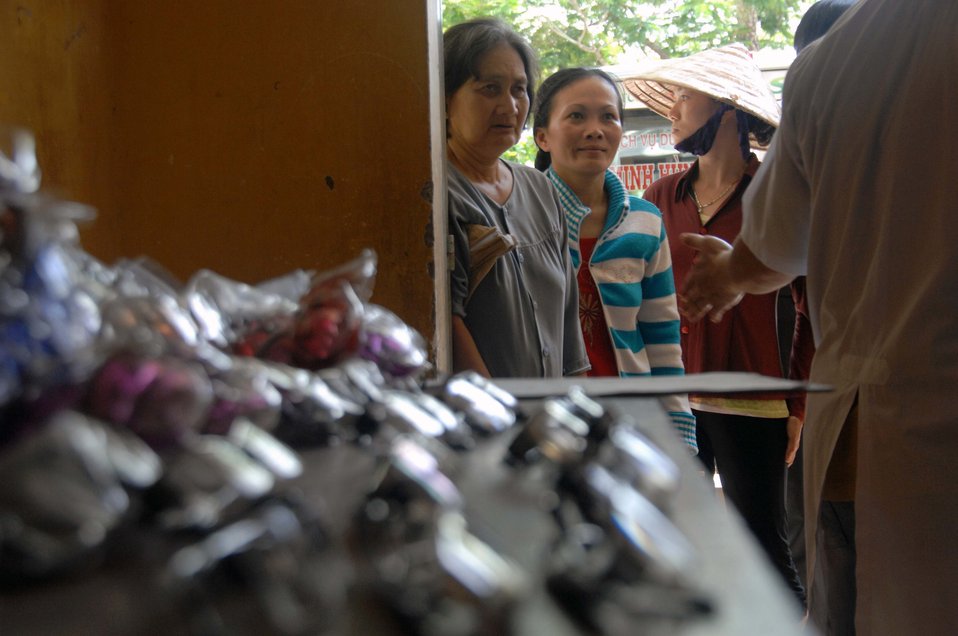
U.S., Vietnam building great relationships says U.S. Consul General

As part of Operation Pacific Angel, scores of Vietnamese villagers wait to be seen by an optometrist in hopes of correcting their vision and receiving a set of prescription glasses stacked on the table May 10, 2010, in Tan Thoi, Vietnam. Pacific Angel is a joint and combined humanitarian and civic assistance operation conducted in the Pacific in support of U.S. Pacific Command's capacity building efforts.